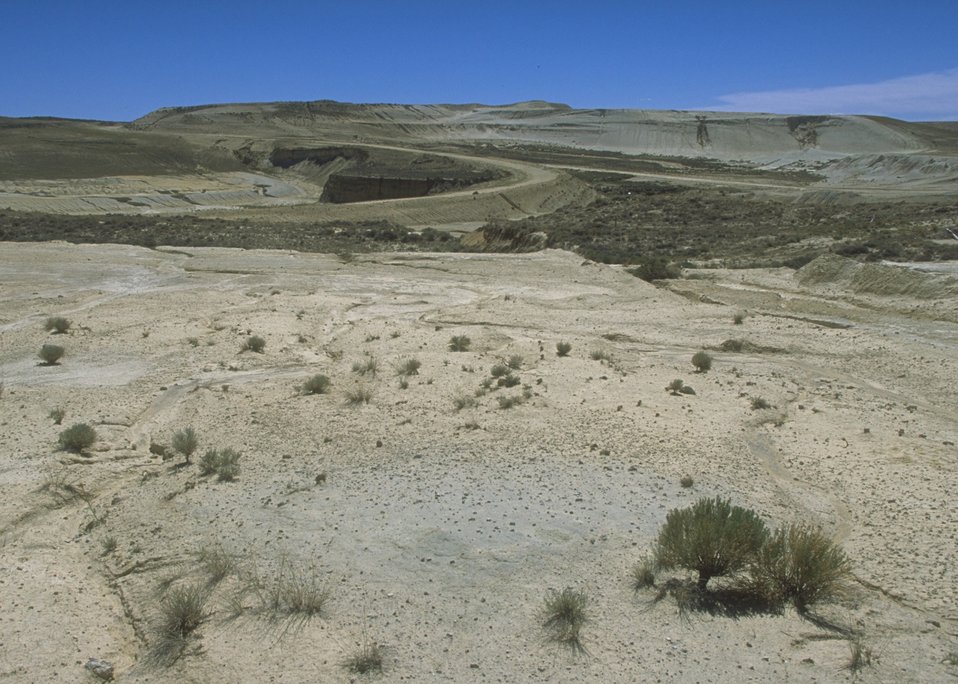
Gas Hill Abandoned Mine Lands in various stages of rehabilitation, Lander Field Office.